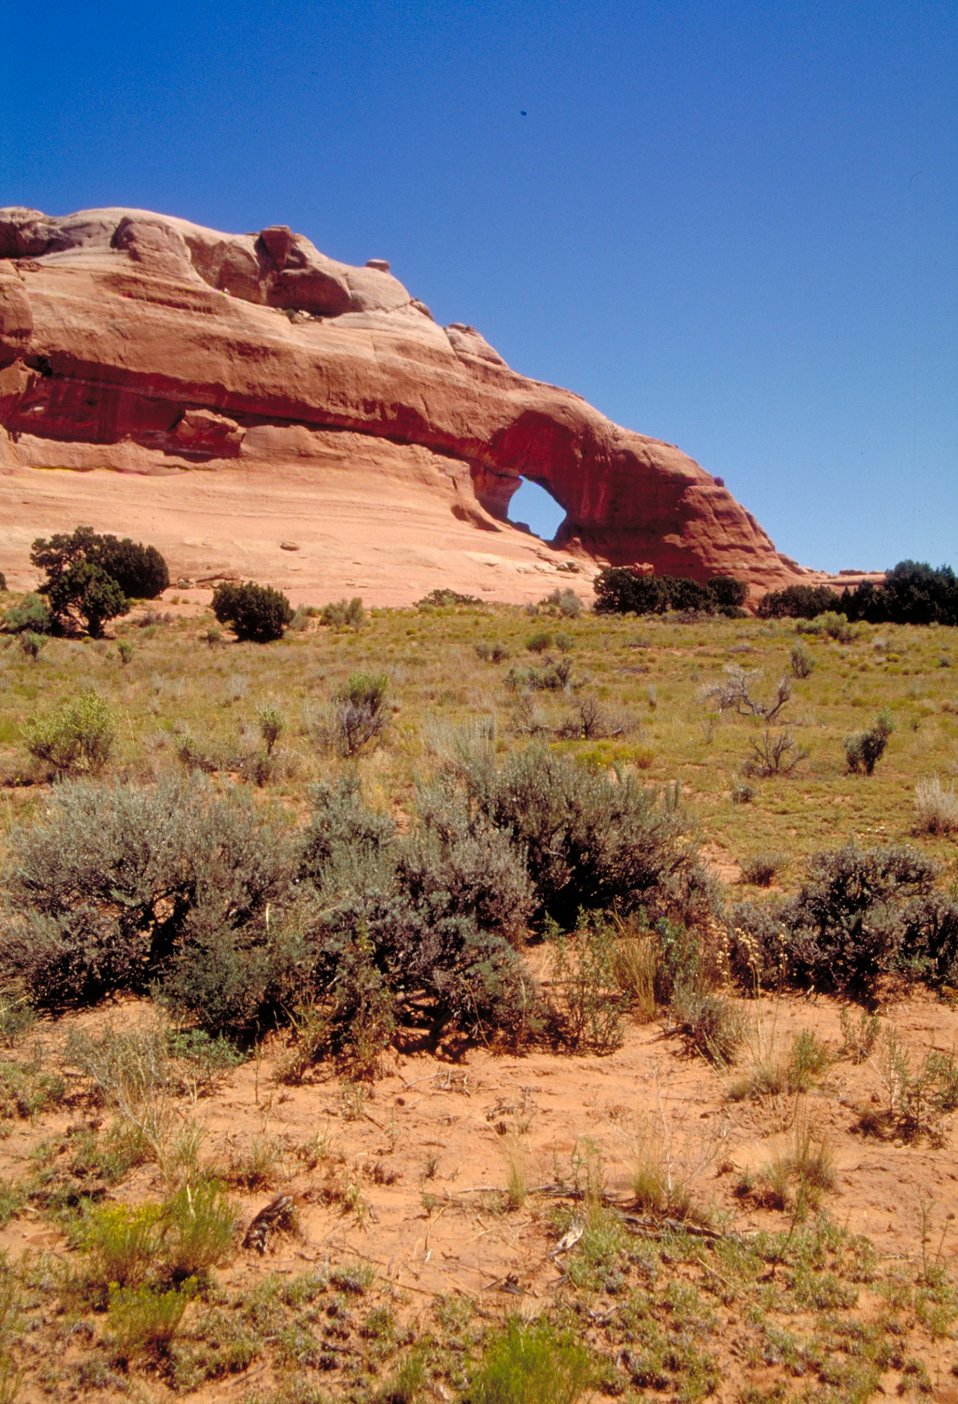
Looking Glass Rock near Moab, Utah.